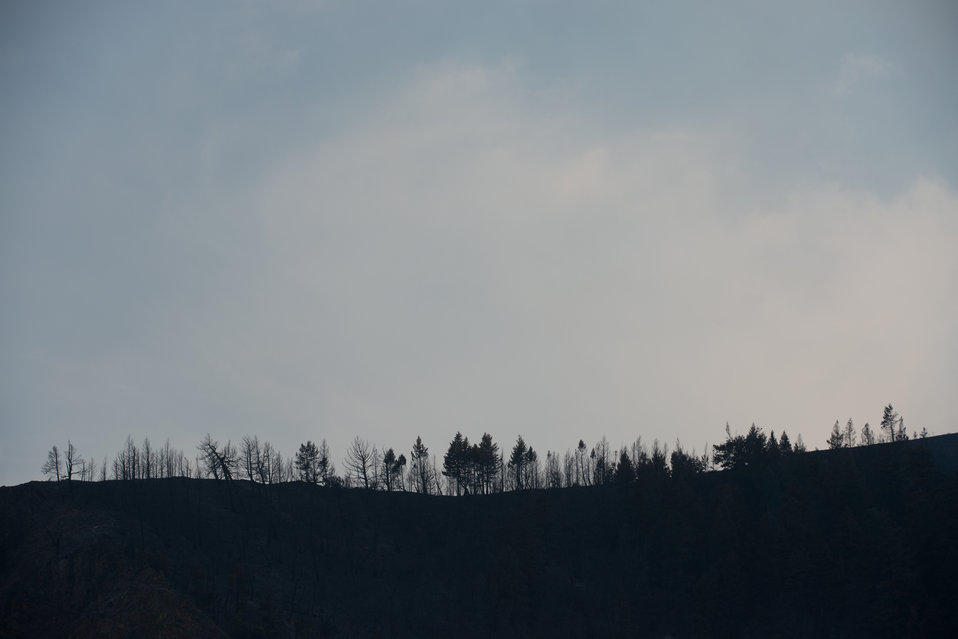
The Beaver Creek Fire left charred undergrowth and grounds on parts of the Carbonate Ridge west of Hailey, ID, on Monday, Aug 19, 2013.